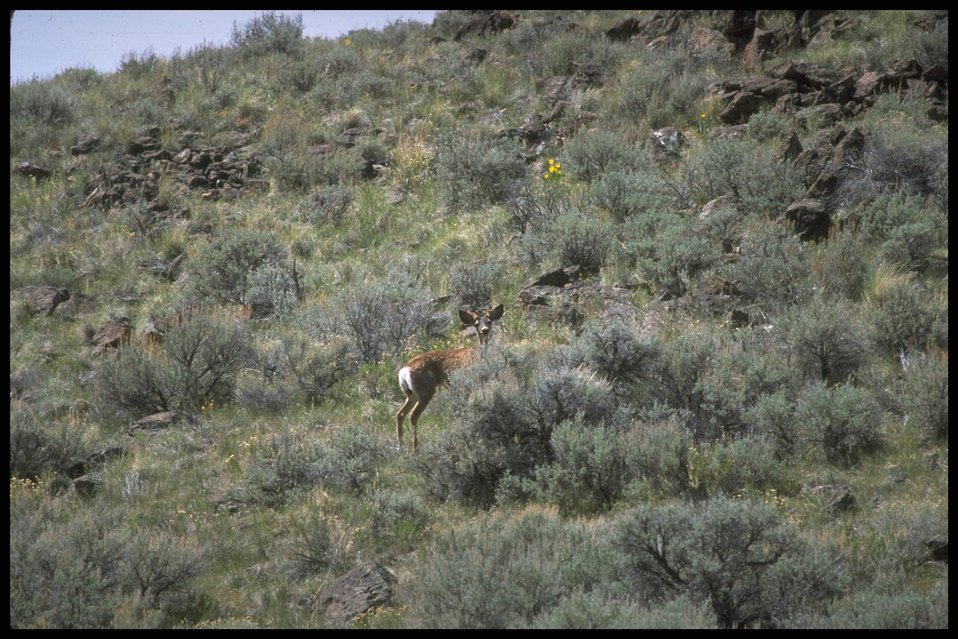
Far shot of deer, Lakeview District.